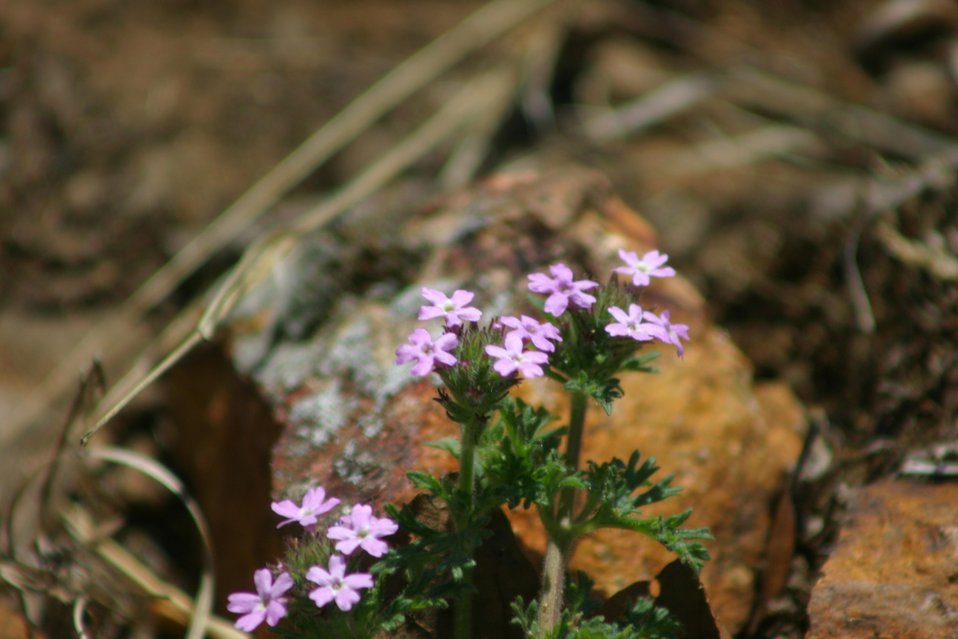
Large flowered Verbena

Wildflowers at Wichita MountainsWildlife Refuge in Oklahoma.